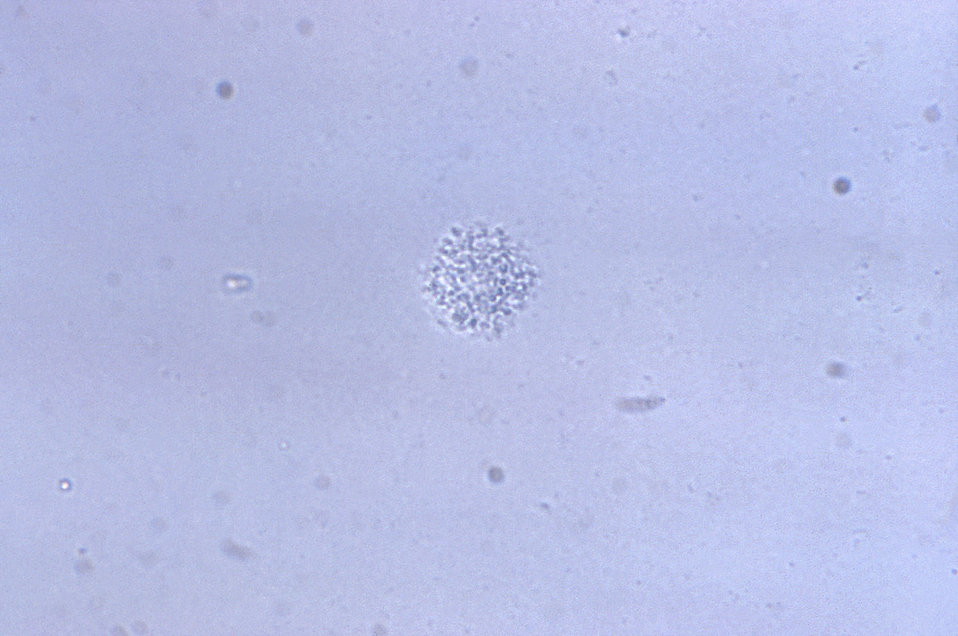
Magnified 500X, four times greater than PHIL 10934, this photograph revealed some of the morphologic features exhibited by a single of large-sized Ureaplasm urealyticum, otherwise known as T-mycoplasma, colony. Unlike the heavy colonial growth seen in PHIL 10930 through 10933, these organisms produced only sparse growth on 1ml agar.